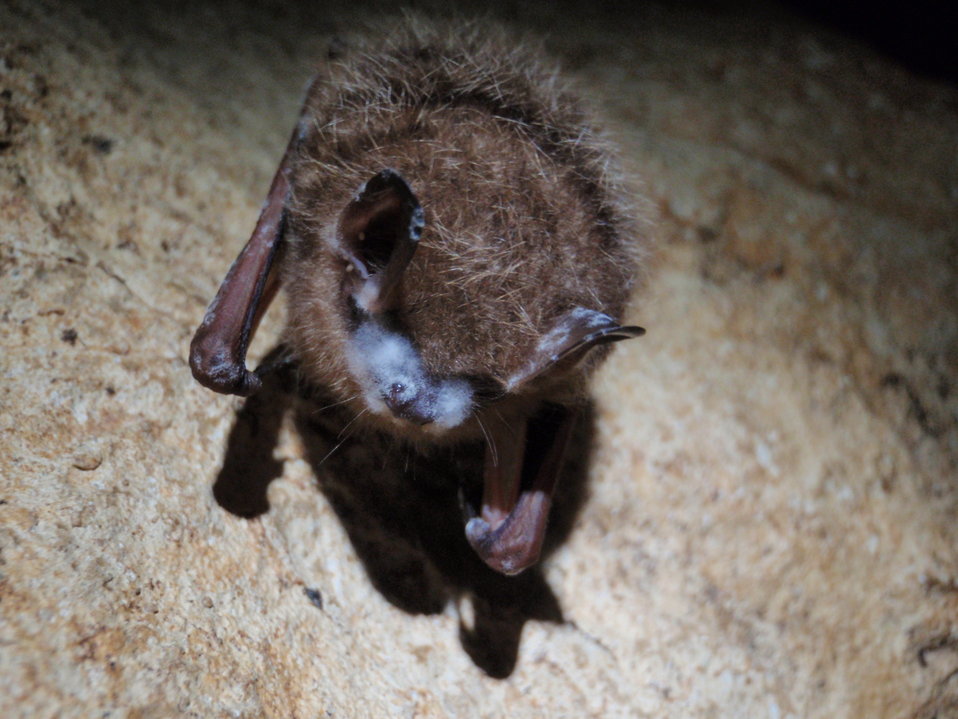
Tri-colored bat with visible signs of WNS from Cumberland Gap National Historic Park